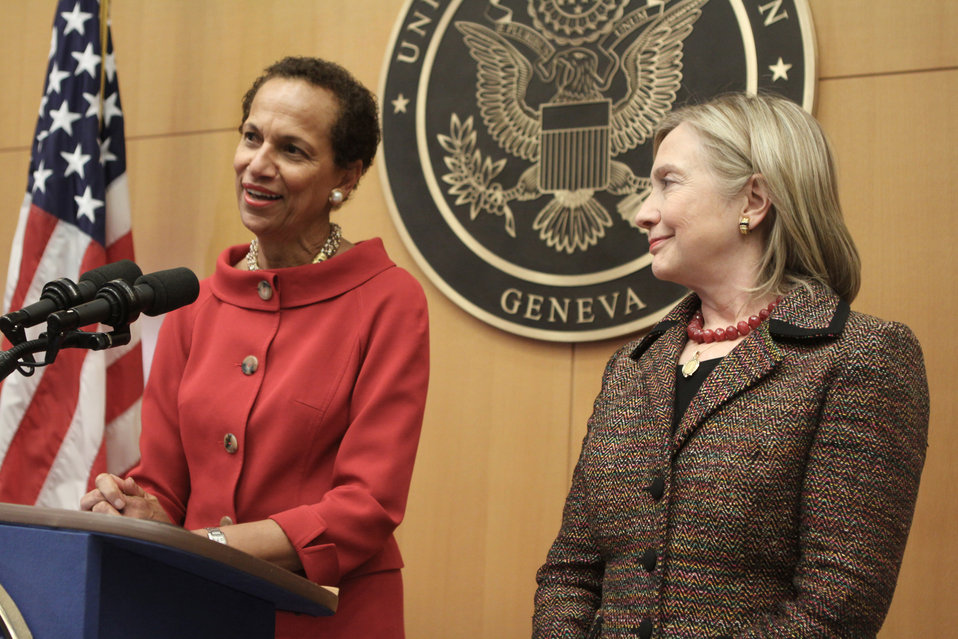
Ambassador King Introduces Secretary Clinton to the U.S. Mission in Geneva

U.S. Permanent Representative to the United Nations in Geneva Betty E. King introduces U.S. Secretary of State Hillary Rodham Clinton at a “Meet and Greet” event for the staff of the United States Mission in Geneva, Switzerland, on February 28, 2011.